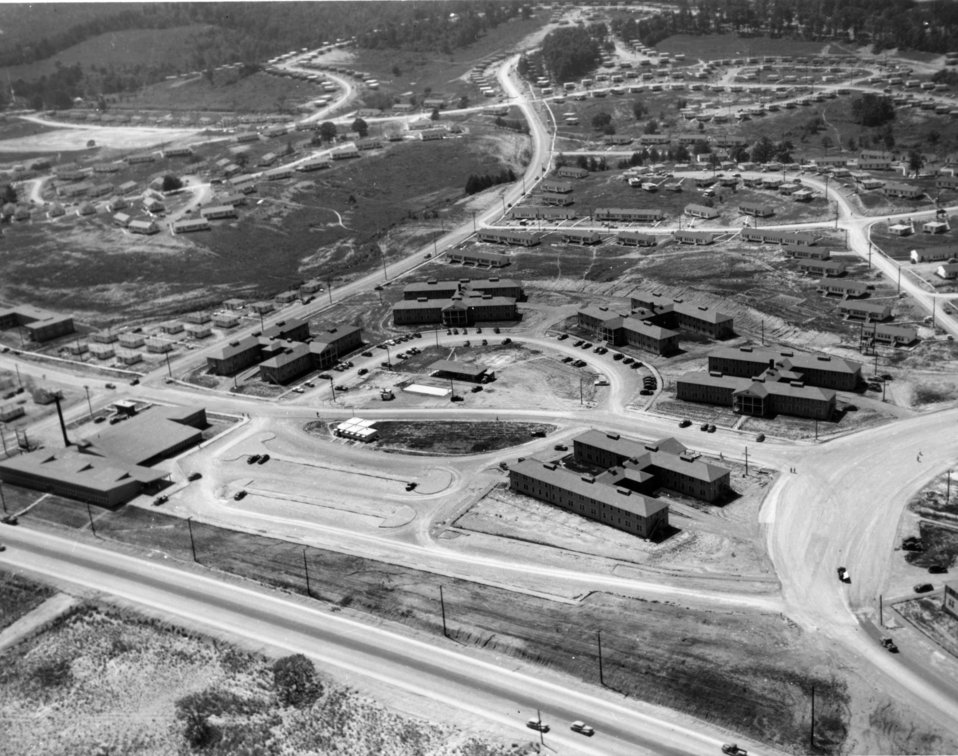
Aerial of Oak Ridge